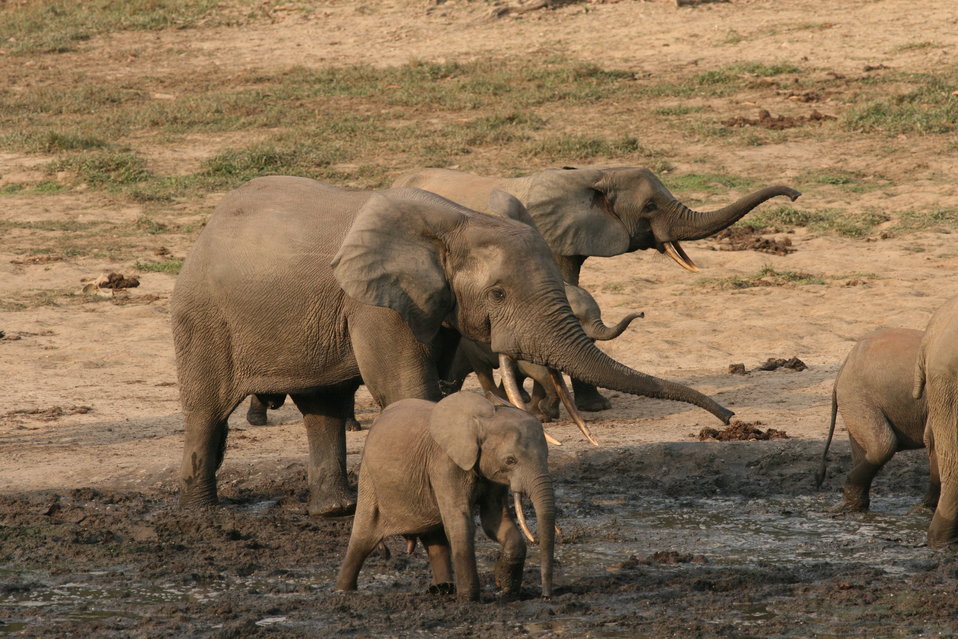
Forest elephant group 6

Forest elephants gather at clearings, which unfortunately makes them susceptible to ambush by poachers.